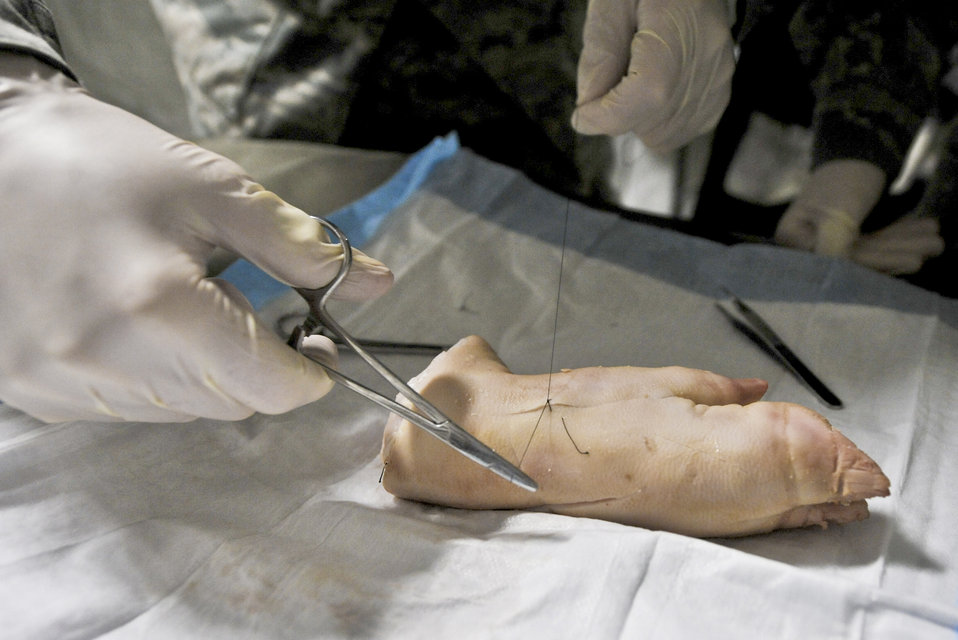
EMED training a first at JBER

Master Sgt. Jason Bradley demonstrates, using a pig's foot, the proper way to suture Aug. 12, 2010, at Joint Base Elmendorf-Richardson, Alaska.